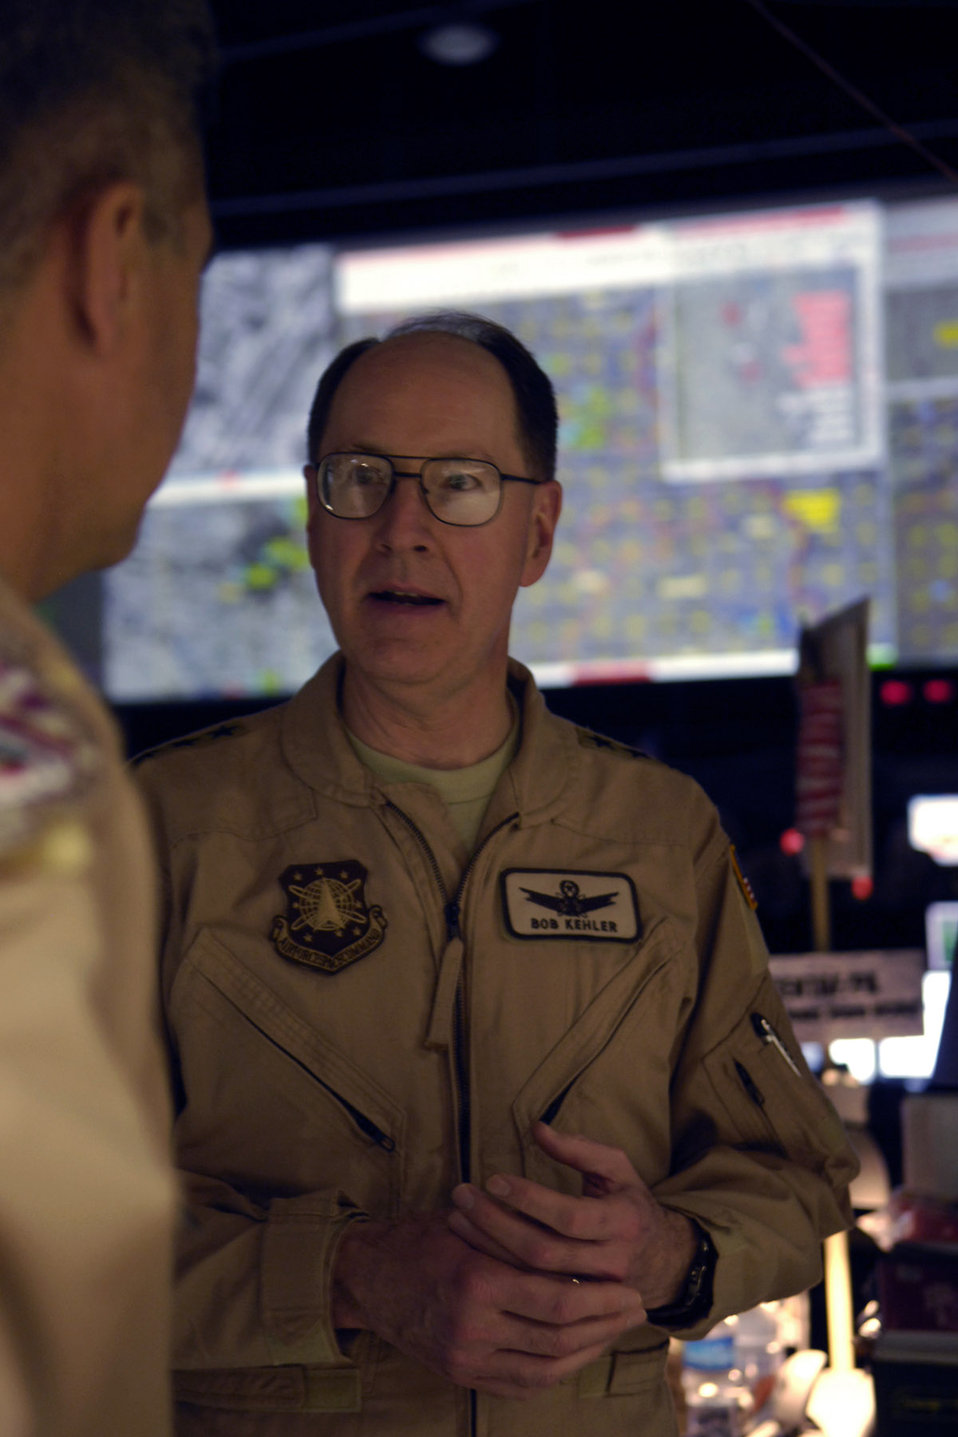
AFSPC commander sees space assets in action

Gen. C. Robert